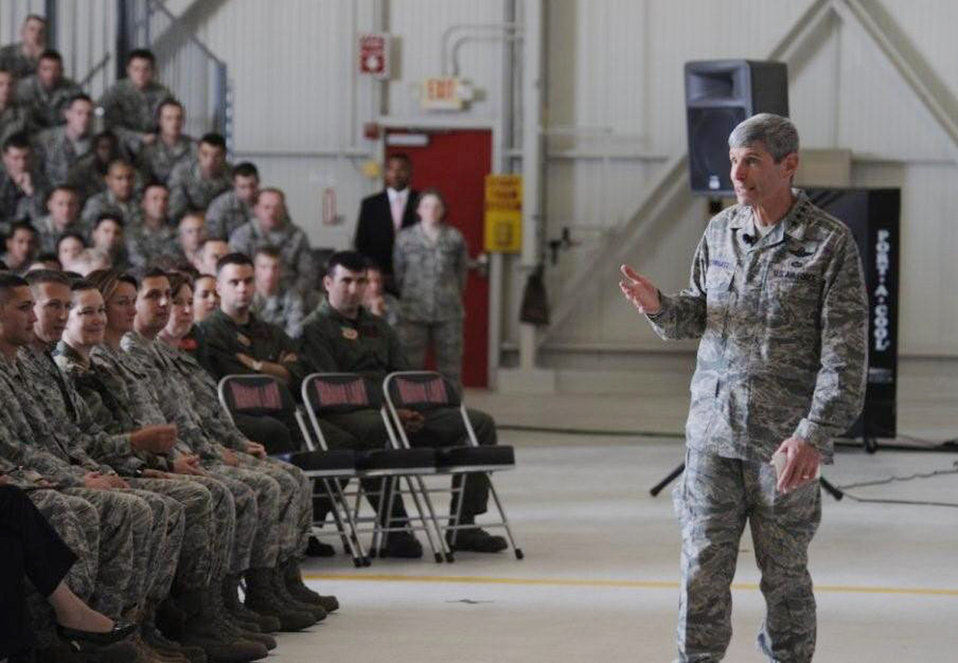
CSAF visits Beale

Air Force Chief of Staff Gen. Norton Schwartz speaks during an Airmen's Call Aug. 21 at Beale Air Force Base, Calif., home of the 9th Reconnaissance Wing and its U-2 and RQ-4 Global Hawk reconnaissance aircraft.